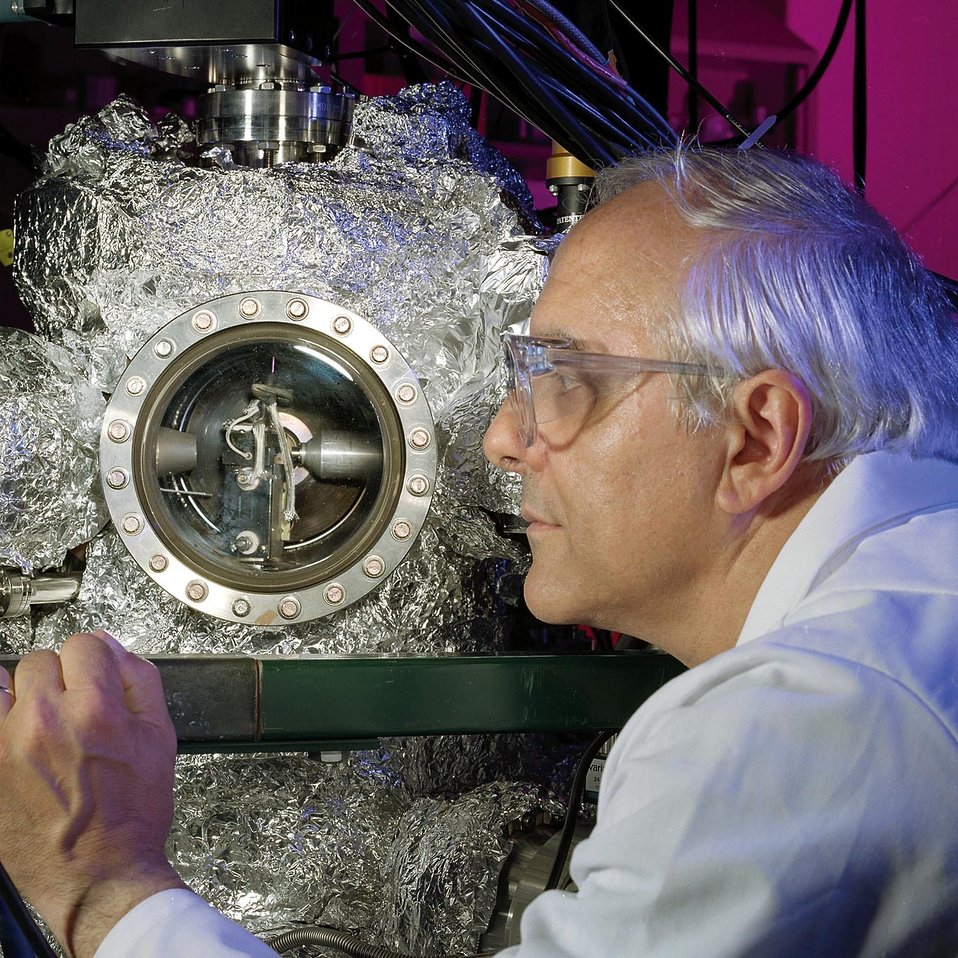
SCIENTIST USES UNIQUE ARGONNE DEVELOPED SYSTEM TO DETECT INDIVIDUAL ATOMS AS THEY LAND ON SUBSTRATE SURFACES.

ARGONNE RESEARCHERS ARE DESIGNING THE CENTER FOR NANOSCALE MATERIALS AS ONE OF FIVE NANOSCALE SCIENCE RESEARCH CENTERS PROPOSED NATIONALLY BY DOE. IN ADDITION, ANL HAS JOINED RESEARCH FORCES WITH THE UNIV. OF CHICAGO IN A NANOSCIENCE CONSORTIUM AS WELL AS WITH SEVERAL OTHER UNIVERSITIES AND PRIVATE INDUSTRIES.